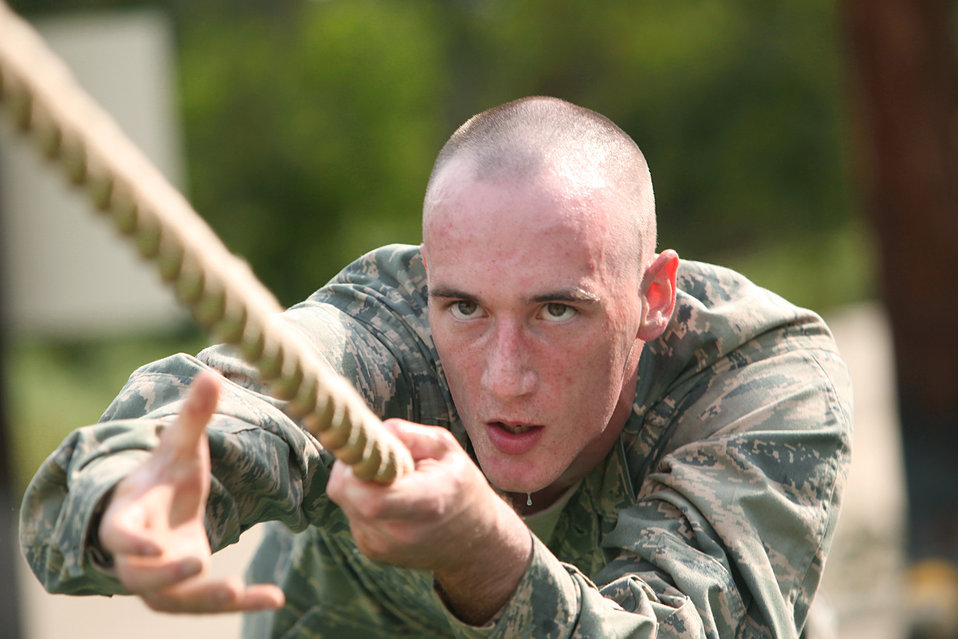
Trainees take on confidence course

An Air Force Basic Military Training trainee completes an obstacle June 30, 2010, at Lackland Air Force Base, Texas. The BMT confidence course tests a trainee's strength, endurance and willpower.